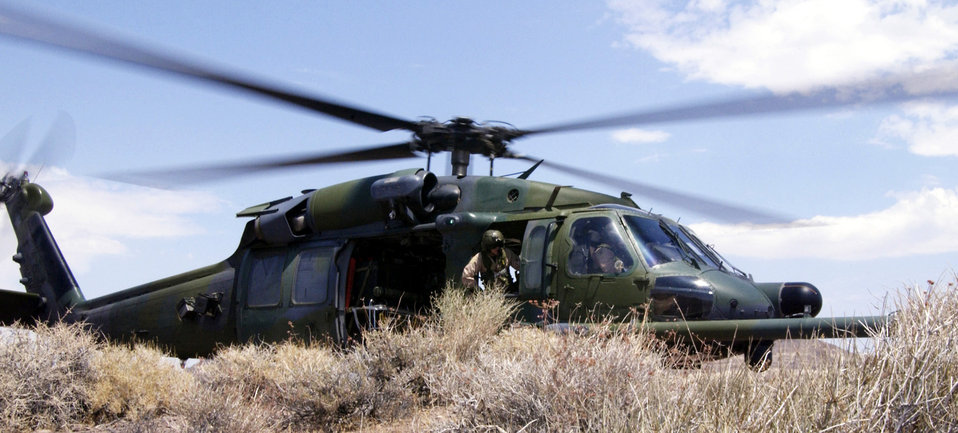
Waiting in the desert

NELLIS AIR FORCE BASE, Nev. -- An HH-60 Pave Hawk from the 66th Rescue Squadron here, waits for their mission orders. The 66th RQS is conducting Combat Search and Rescue exercises with the 510th Fighter Squadron, Aviano Air Base, Italy in preparation for the upcoming Red Flag.